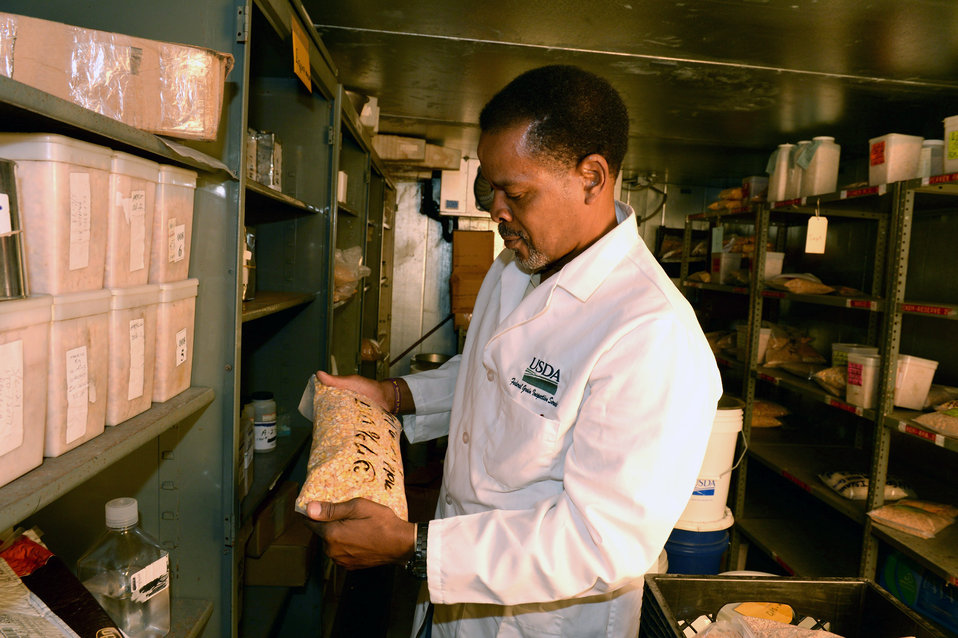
U.S. Department of Agriculture (USDA) Grain Inspection, Packers and Stockyards Administration (GIPSA) Federal Grain Inspection Service (FGIS) employee examine grain samples stored at the FGIS inspection laboratory in New Orleans, LA on Monday, Nov. 18, 2013.